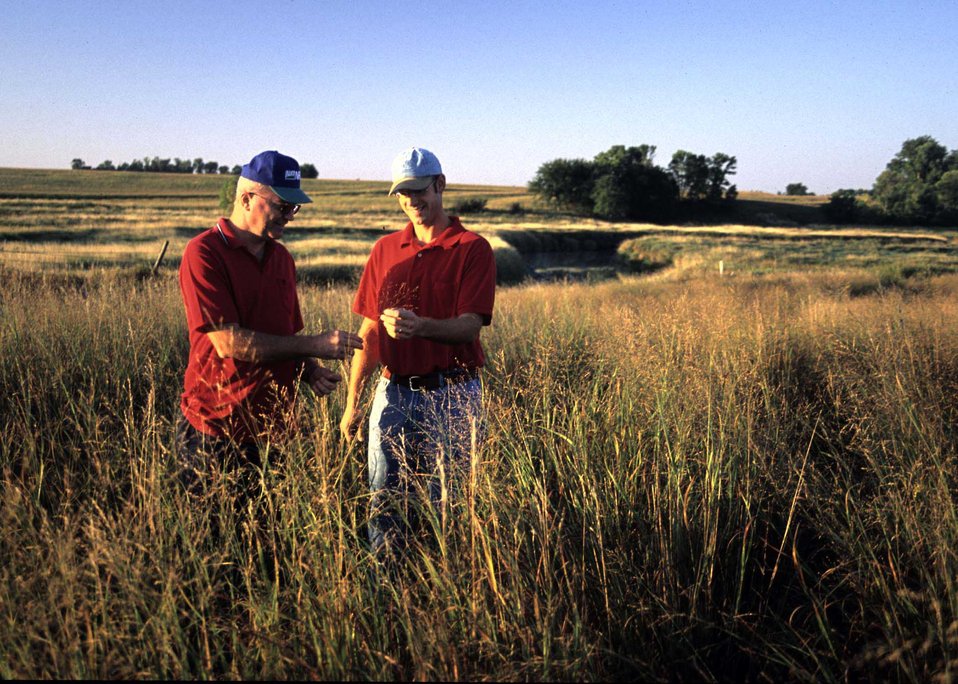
Conservationists check switchgrass in a CRP planting in Kossuth County, Iowa.